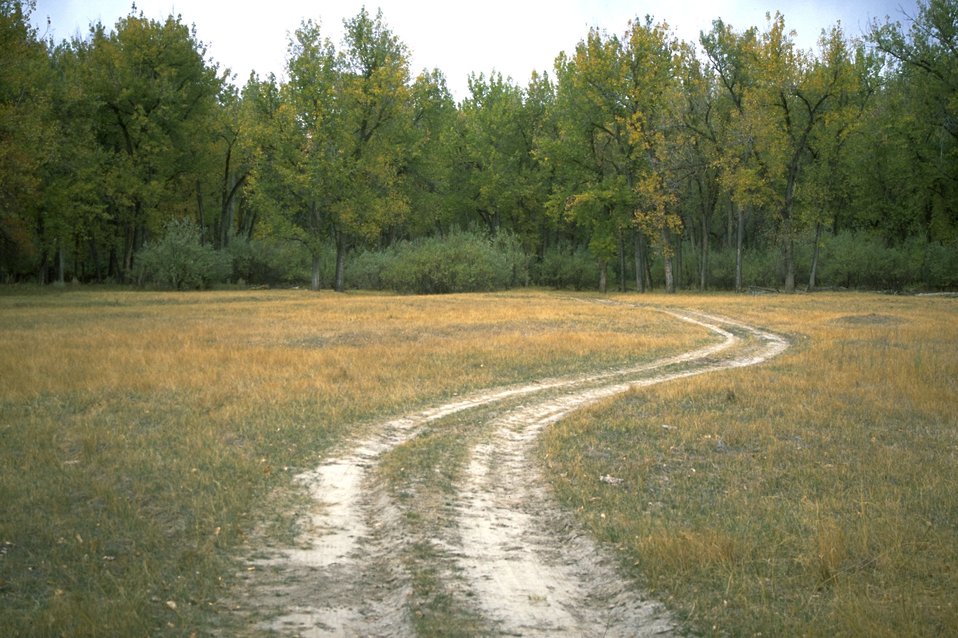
Road leading into the trees at Howrey Island Recreation Area